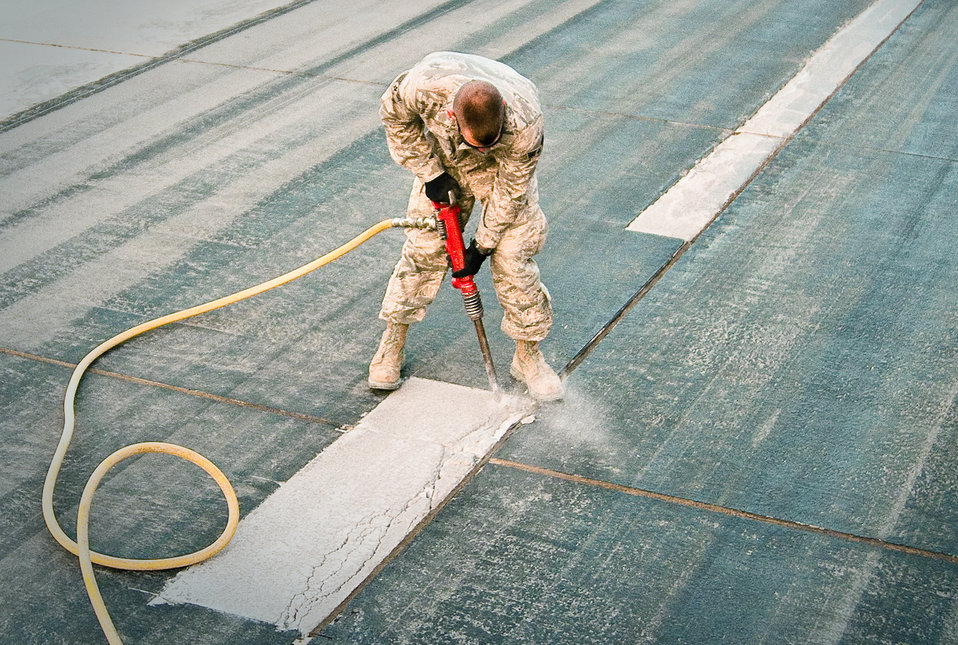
Runway repair team keeps airlift moving at 386th AEW

Senior Airman Jacob Cleer uses a jackhammer Dec. 10, 2010, to excavate a section of crumbling concrete on a runway at an air base in Southwest Asia. Airman Cleer is a heavy equipment operator assigned to the 386th Expeditionary Civil Engineer Squadron. Squadron members conduct weekly runway repairs to prevent damage to aircraft from foreign object debris.